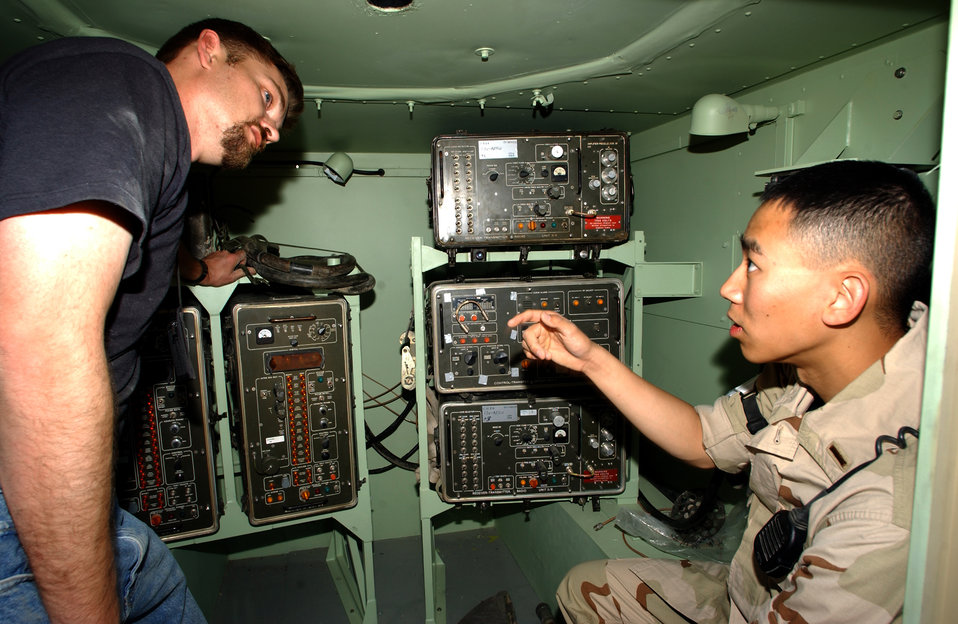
Navigation system

TALLIL AIR BASE, Iraq -- Joseph Taylor (left) discusses the functions of the Tactical Air Navigation System with 2nd Lt. Louis T. Wong here April 11. The system provides navigation information to permit aircrews to determine their position in relationship to an airfield. Mr. Taylor is a contractor and Lieutenant Wong from the 407th Expeditionary Communications Squadron.